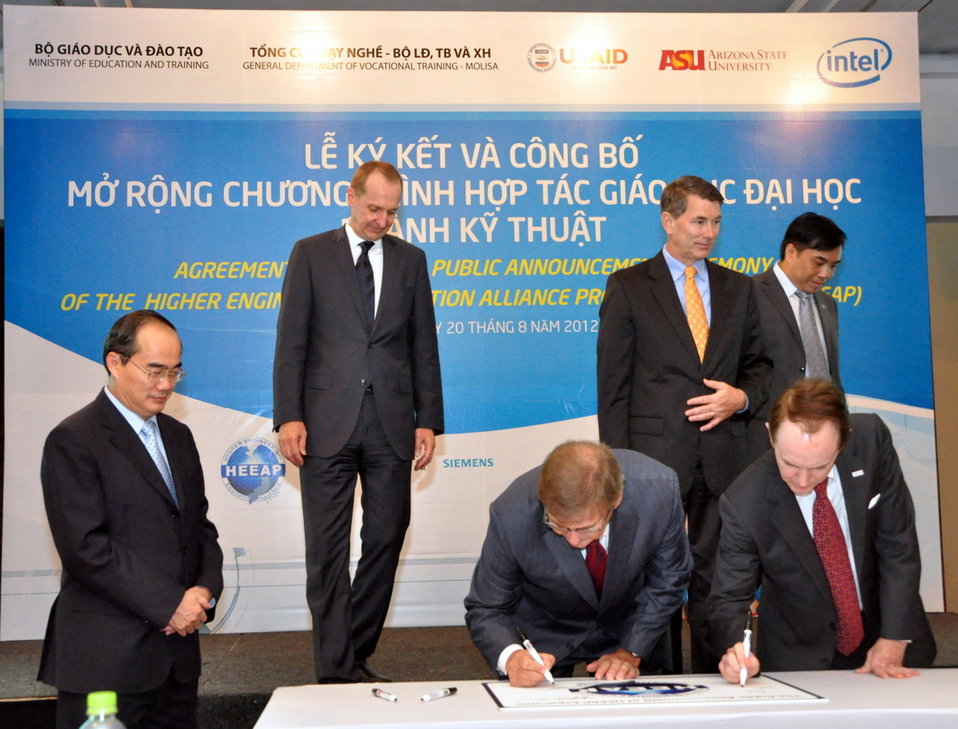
Higher Engineering Education Alliance Program Expansion Launch

Hanoi, August 20, 2012.